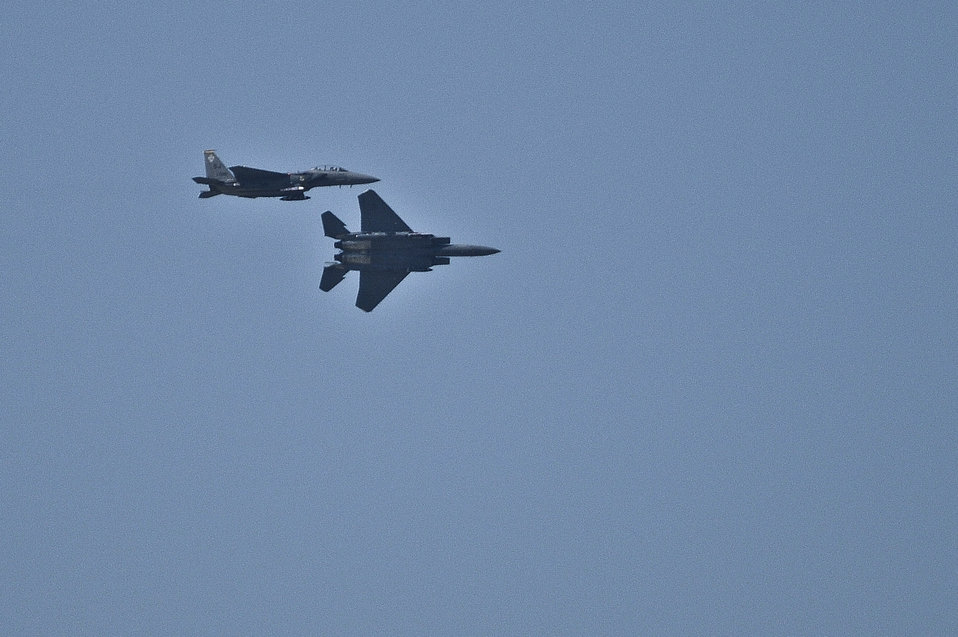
Strike Eagle, Fighting Falcon 'thunder' over Kentucky

Two F-15E Strike Eagles fly over the Kentucky Air National Guard Base in Louisviile, Ky., April 15, 2010. The F-15Es are assigned to the 4th Fighter Wing at Seymour Johnson Air Force Base, N.C., and will perform at the Thunder Over Louisville air show.